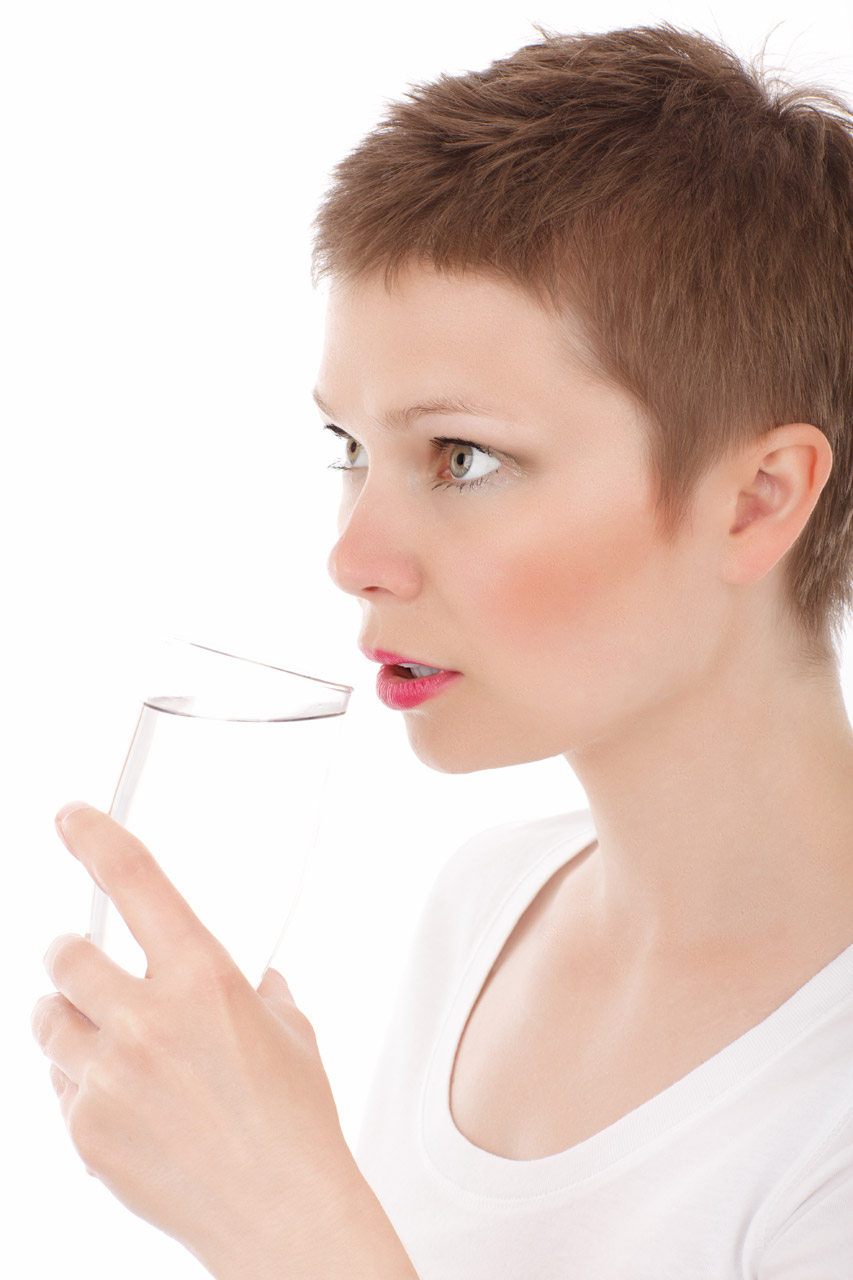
Young woman drinking a glass of water isolated on white background - jana svojsova.